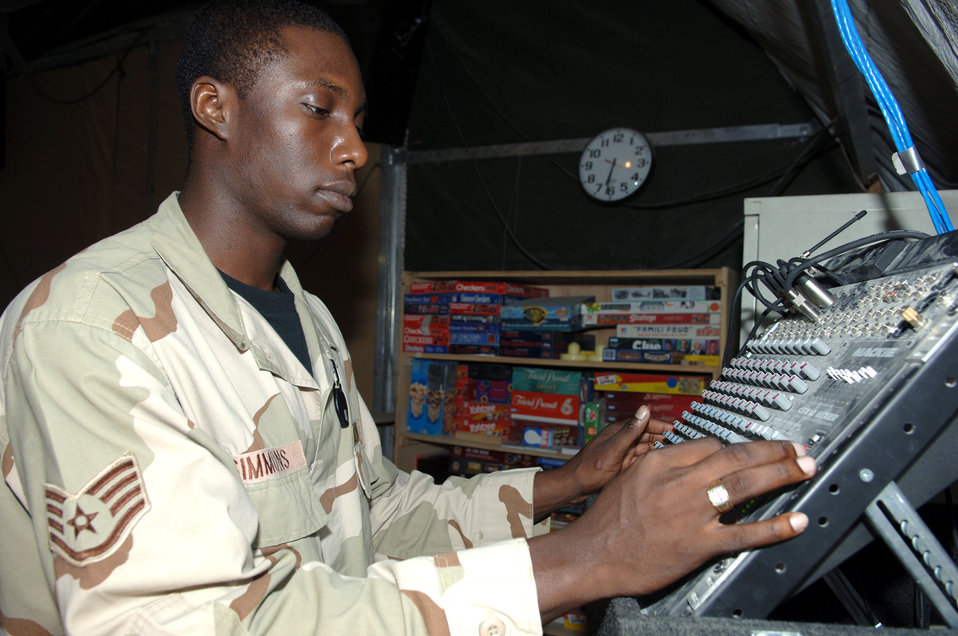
Morale building

BAGRAM AIR BASE, Afghanistan (AFPN) -- Staff Sgt. Charles Simmons checks the sound level before hip hop night. Hip hop night is one of many morale-building programs here. All three organizations -- Airmen Committed to Excellence, Middle Tier Association, and the Top 3 Organization -- are doing their part supporting the 455th Expeditionary Services Squadron's morale-building initiatives. Sergeant Simmons is from Nashville, Tenn., and deployed from Davis-Monthan Air Force Base, Ariz.